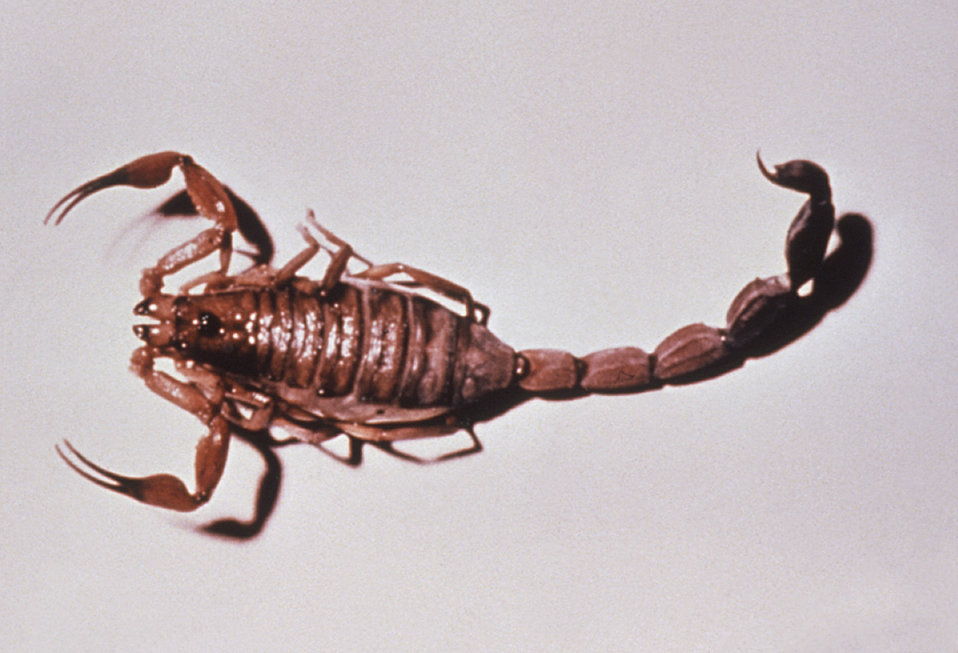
This is a dorsal view of a highly toxic black scorpion, Tityus trinitatis, which is native to Trinidad.